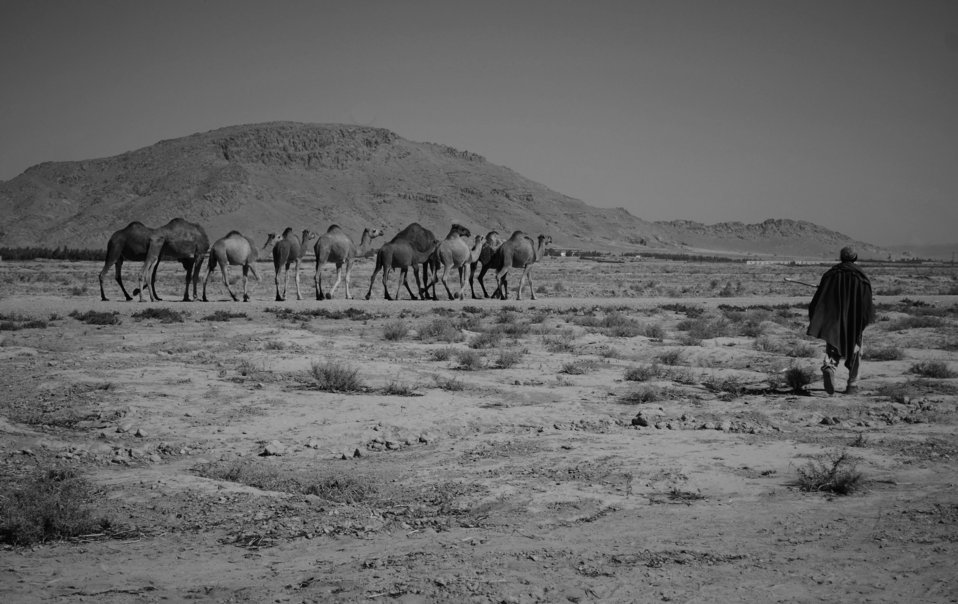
'On the Road' in Kandahar